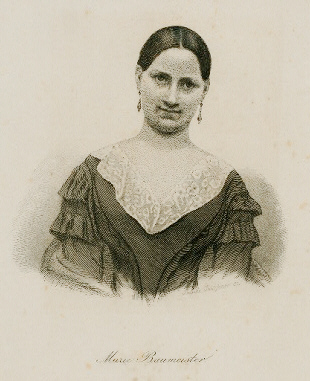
German actress Marie Baumeister (1819-1887)